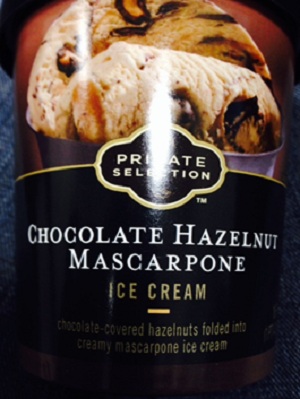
RECALLED – Chocolate Hazelnut Mascarpone Ice cream and Caramel Hazelnut Fudge Truffle Ice cream